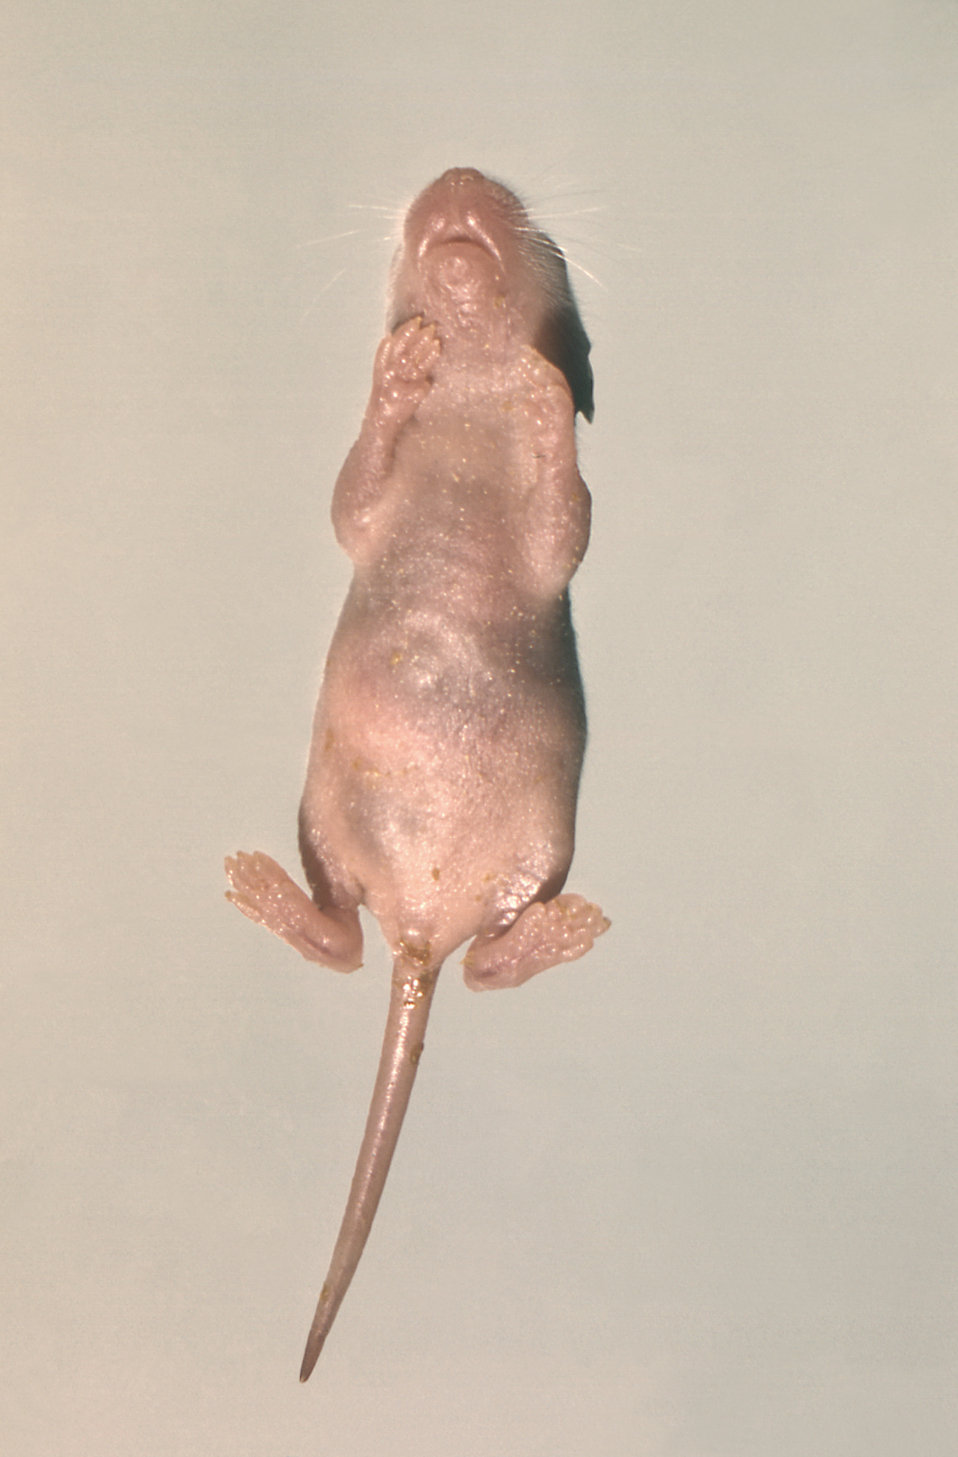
This image depicts an infant mouse at necropsy, just prior to an internal examination of the abdominal cavity (see PHIL 14638), which had succumbed to the pathogenic effects of the mouse hepatitis coronavirus (MHV), formerly known as the lethal intestinal virus of infant mice (LIVIM).